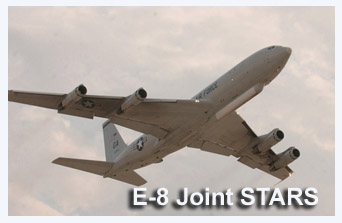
E-8 Joint STARS

The E-8 Joint STARS evolved from Army and Air Force programs to develop, detect, locate and attack enemy armor at ranges beyond the forward area of troops. The first two developmental aircraft deployed in 1991 to Operation Desert Storm and also supported Operation Joint Endeavor in December 1995.